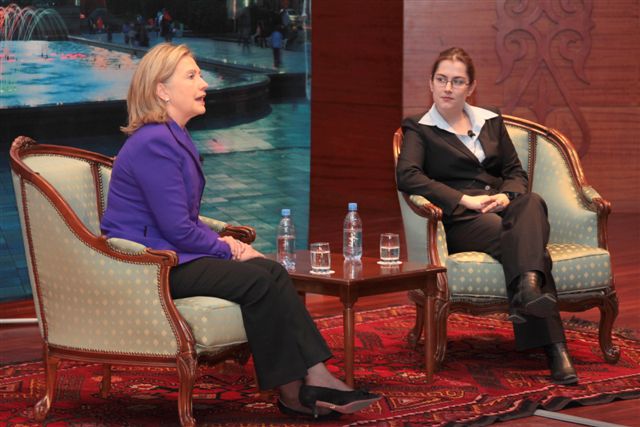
Secretary Clinton Answers a Question

U.S. Secretary of State Hillary Rodham Clinton answers a question at a town hall on “Empowering Civil Society for Central Asia’s Future” in Astana, Kazakhstan, on November 30, 2010.